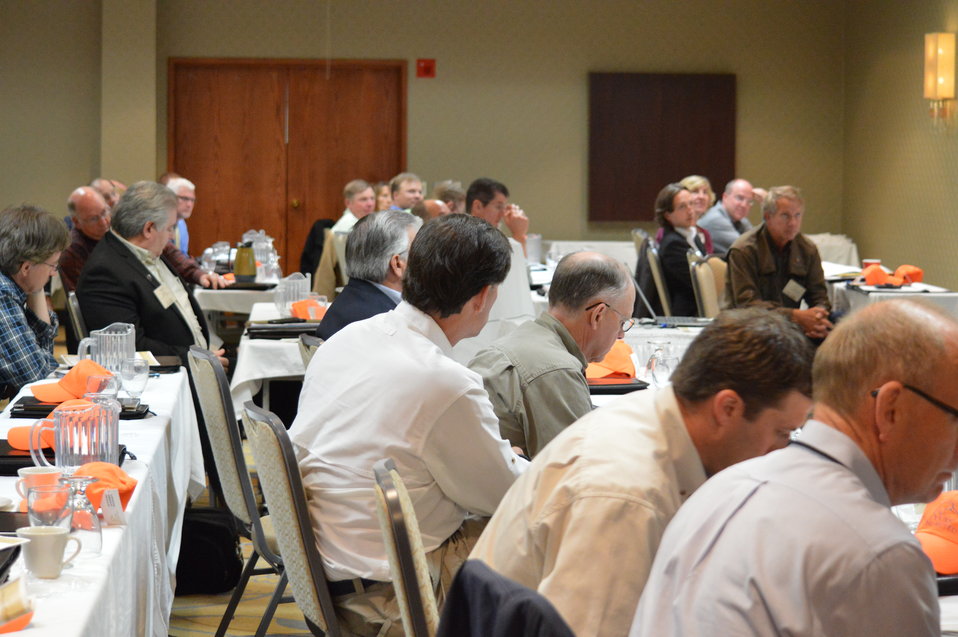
Director Dan Ashe and attendees at the Prairie Summit

Through the efforts of Ducks Unlimited and its partners, a Prairie Summit meeting was held in June 2013 in Bismarck, North Dakota, bringing key stakeholders to the table to identify and begin to address the immediate needs of the overall effort to conserve wetlands and grasslands, as well as bring media attention to the issues at hand and the urgency of the situation.